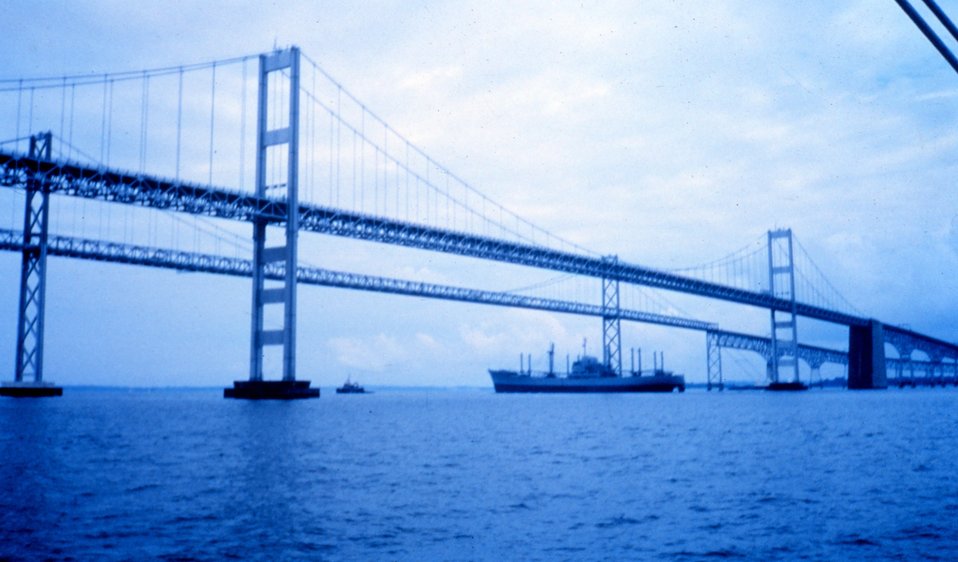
A tugboat tows an old freighter down the bay and under the Chesapeake Bay Bridge .